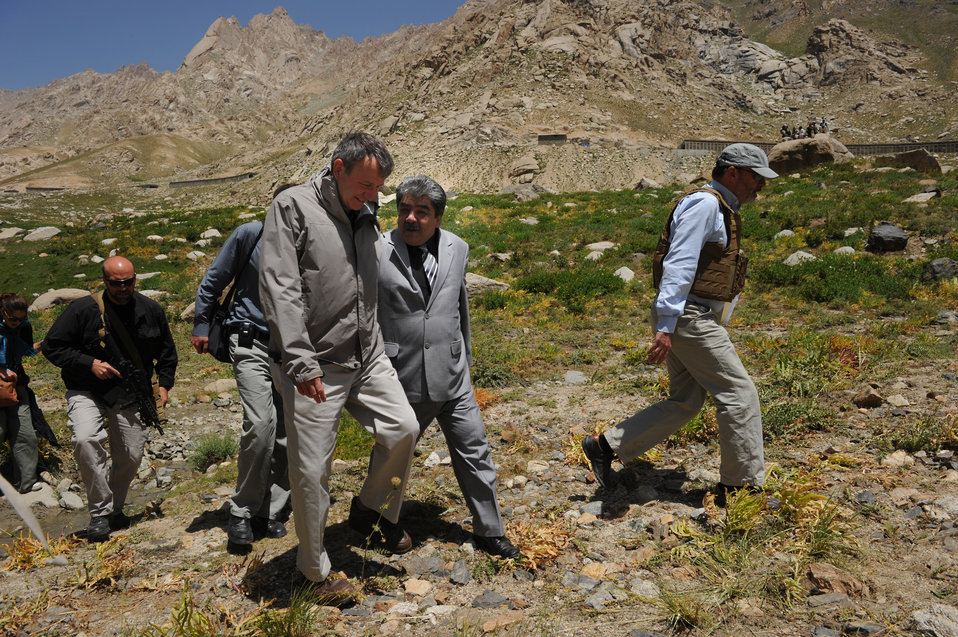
U.S. Ambassador Karl W. Eikenberry and Minister of Public Works Abdul Qudos Niman Hamidi arrive near the South end of the Salang Tunnel to mark the beginning of renovations of the tunnel at the border of Parwan and Baghlan Provinces, Afghanistan, on Wednesday, June 15, 2011. (S.K.Vemmer/Department of State)